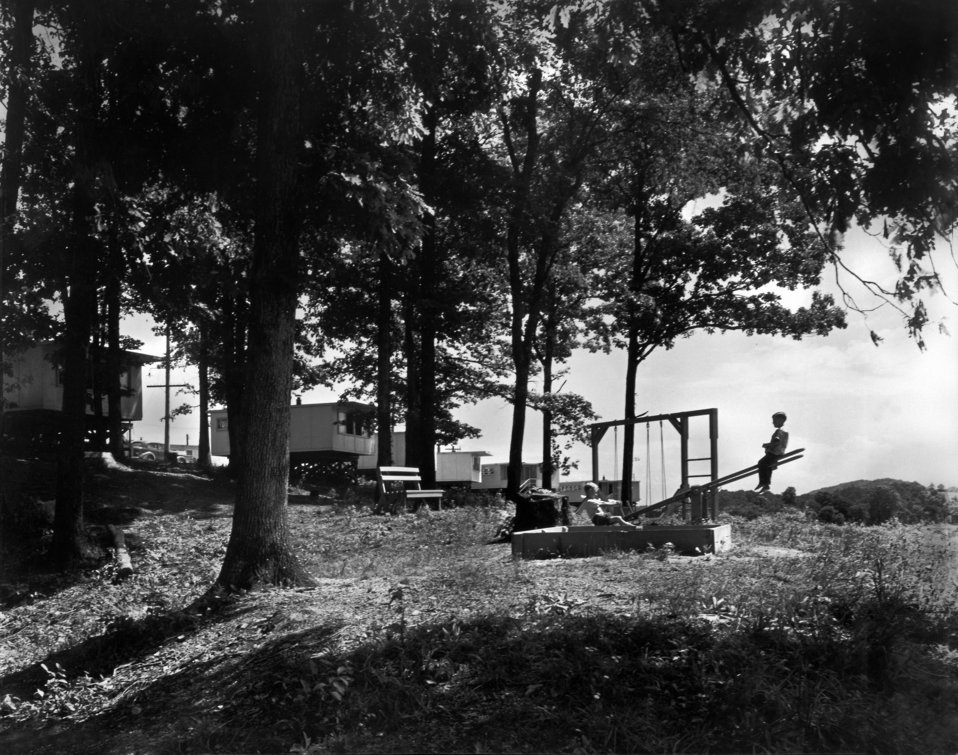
CEW type Playground Oak Ridge

MED91 DOE photo Ed Westcott
CEW type Playground Oak Ridge Tennessee 1944